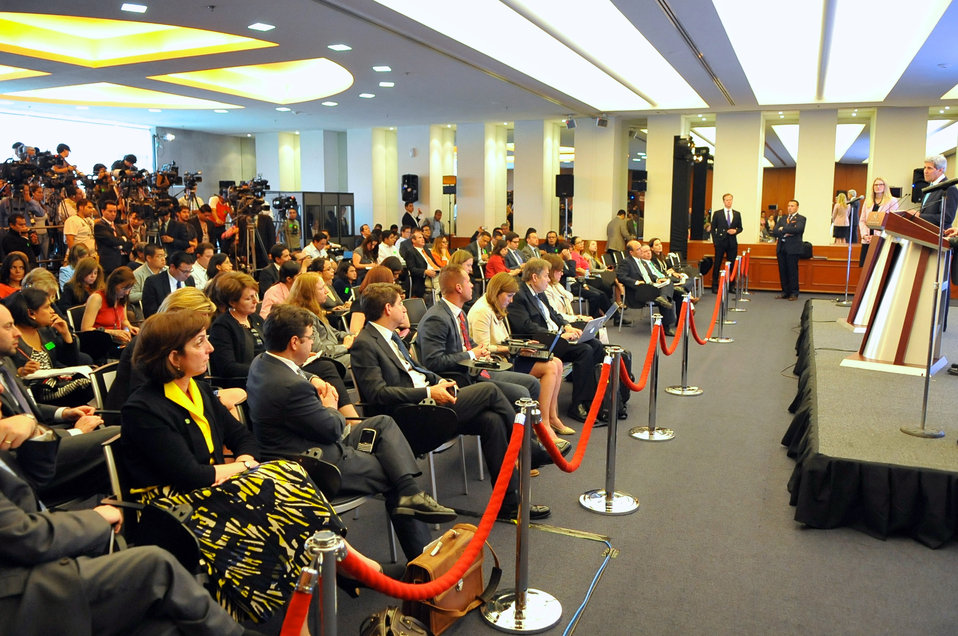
Secretary Kerry Addresses U.S., Mexican Reporters at News Conference

U.S. Secretary of State John Kerry addresses reporters during a joint news conference with Mexican Foreign Secretary José Antonio Meade following a series of meetings in Mexico City on May 21, 2014.